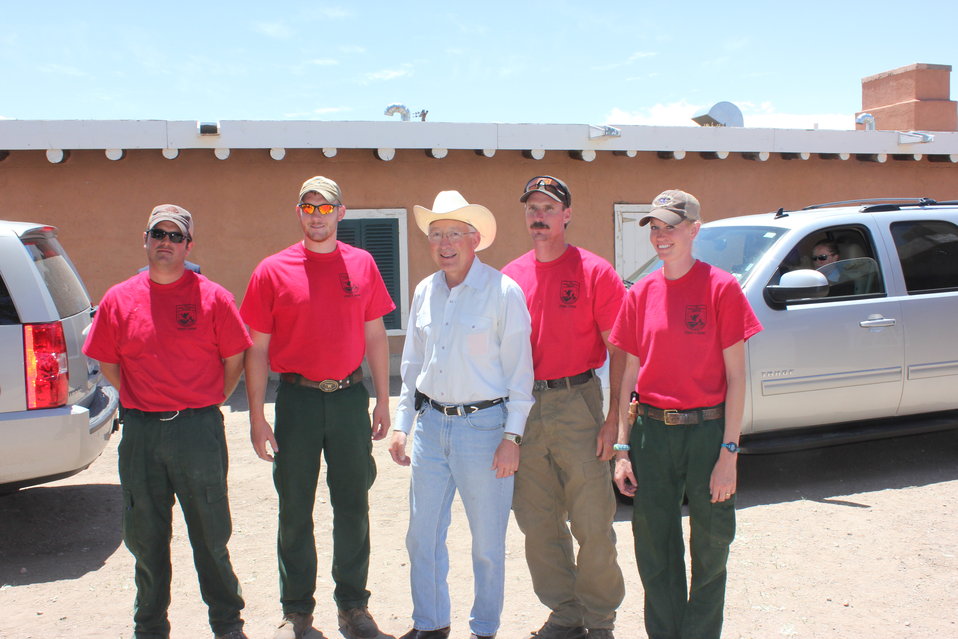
Historic Conservation Easement in Sangre de Cristo Mountains